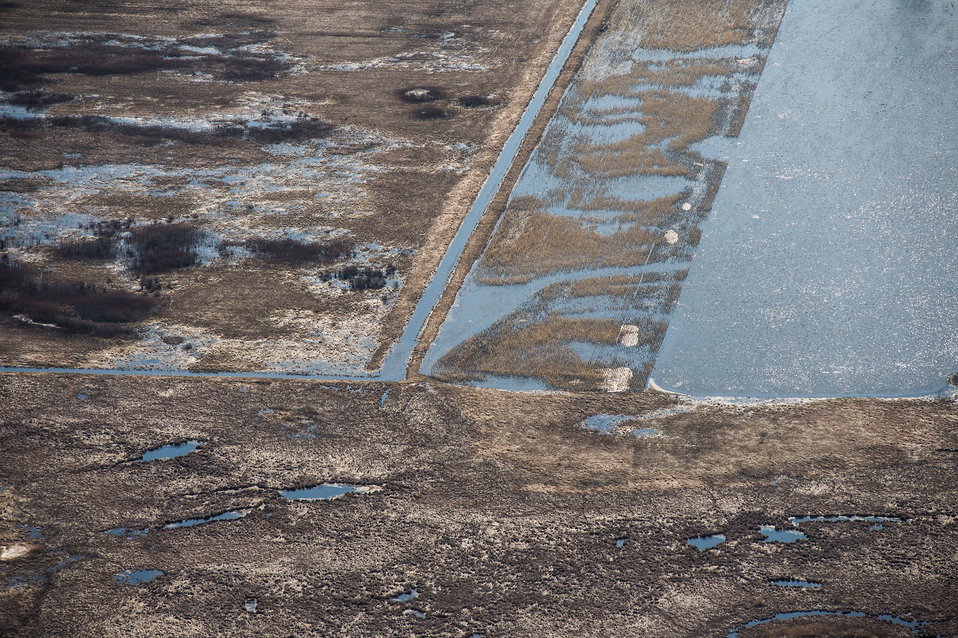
Ehlert U.S. Department of Agriculture (USDA) Natural Resources Conservation Service (NRCS) Wetland Reserve Program (WRP) in Wilkin County, MN, on Tuesday, April 30, 2013. For information about this and other programs from the USDA Red River Basin Initiative (RRBI) please see www.mn.nrcs.usda.gov/news/features13/RRBI.html.